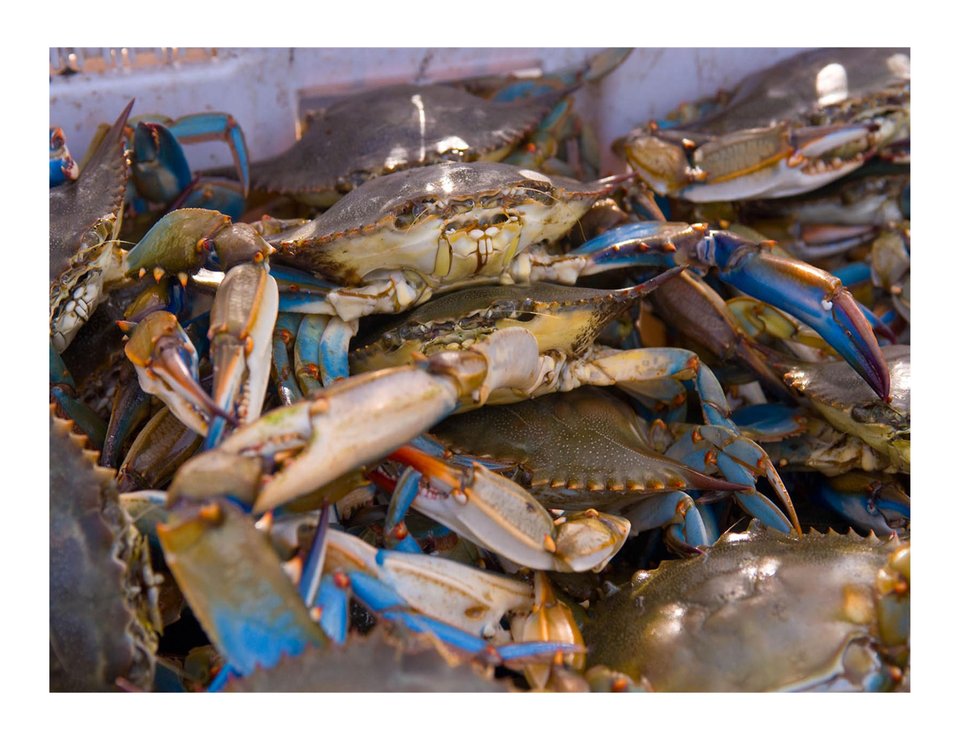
Crab harvest, Louisiana